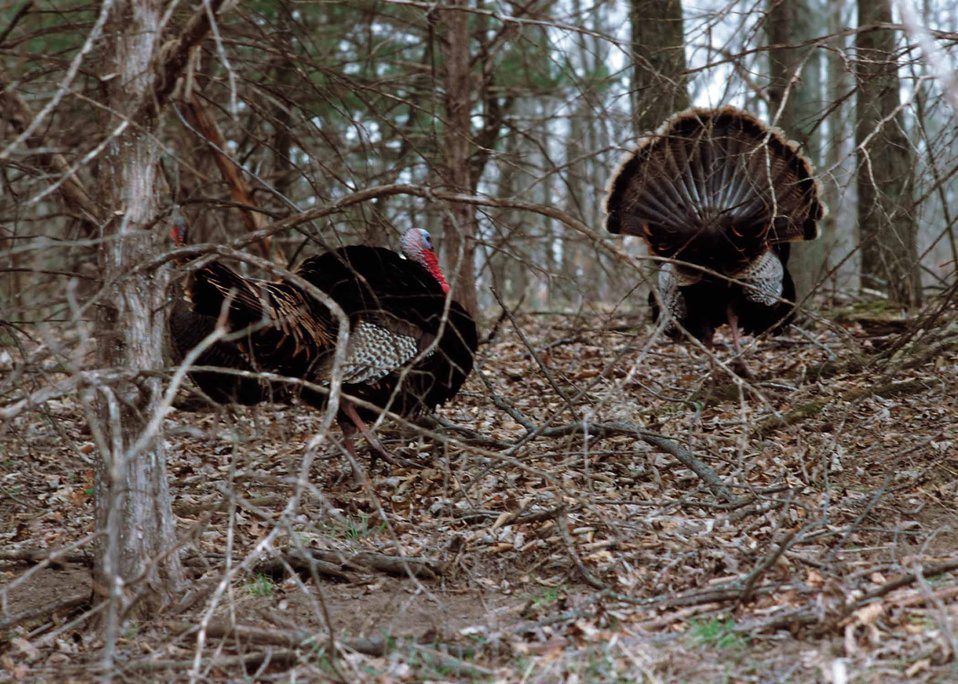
Wild turkeys in Van Buren County, Iowa.